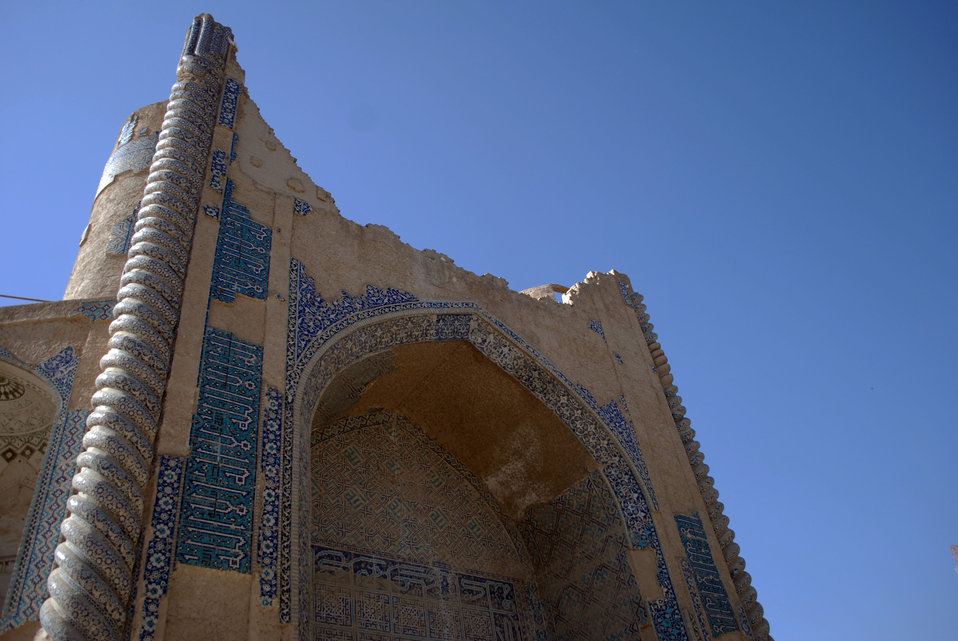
'On the Road' in Balkh Province